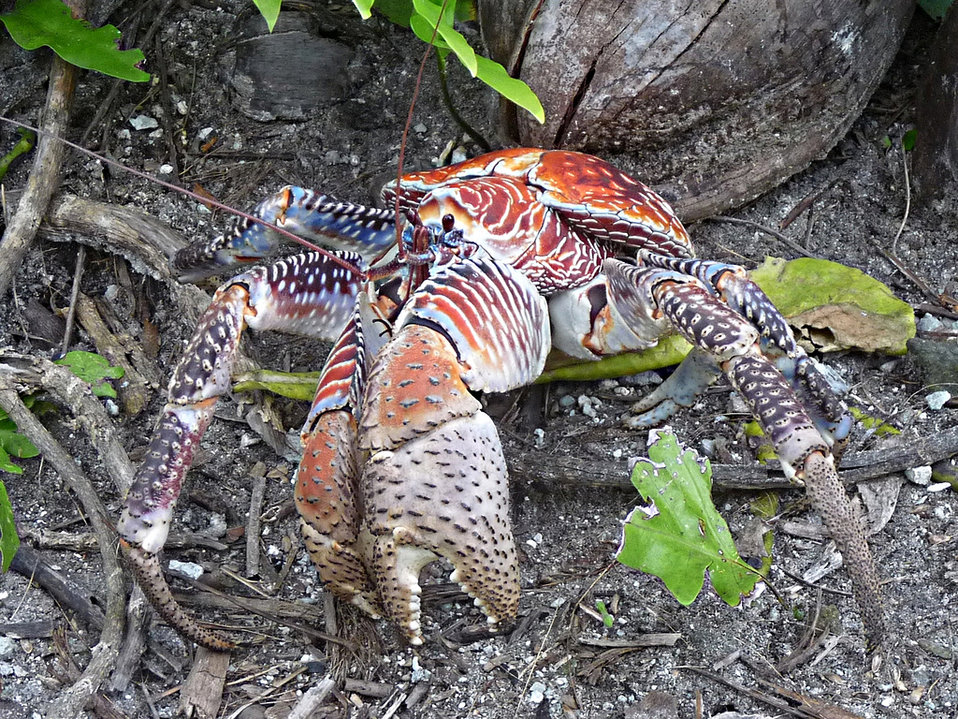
Palmyra Atoll National Wildlife Refuge, Pacific Islands

Coconut crab
Laura J. Beauregard, USFWS